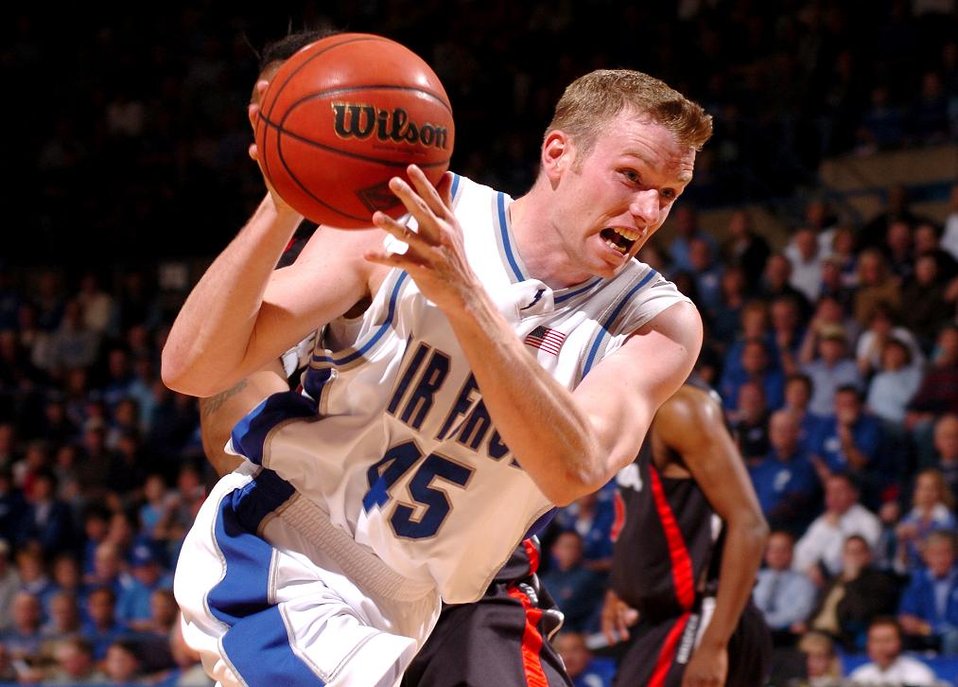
Falcon forwards march over Georgia in NIT

Air Force center Nick Welch drives to the basket March 19 in the second round of the National Invitation Tournament at the Air Force Academy's Clune Arena. Welch put nine points on the board as Air Force went on to win, 83-52. The win over Georgia was Air Force's 25th of the season, a new school record.